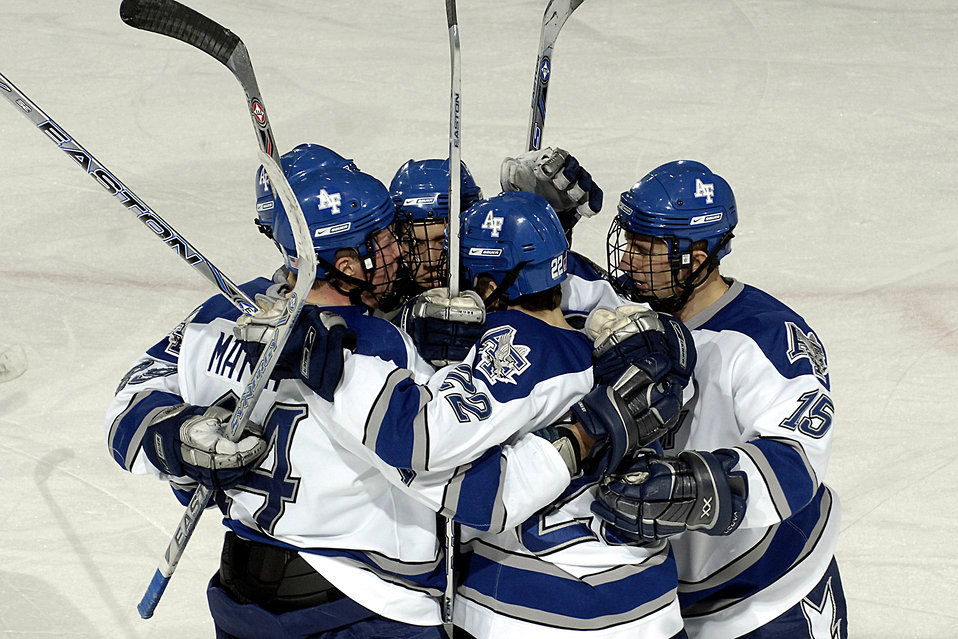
Falcons defeaft Rochester Institute of Technology

Members of the U.S. Air Force Academy hockey team celebrate a goal as the Air Force defeated Rochester Institute of Technology, 5-2, in an Atlantic Hockey Association game Jan. 11 in the Cadet Ice Arena at Colorado Springs, Colo.